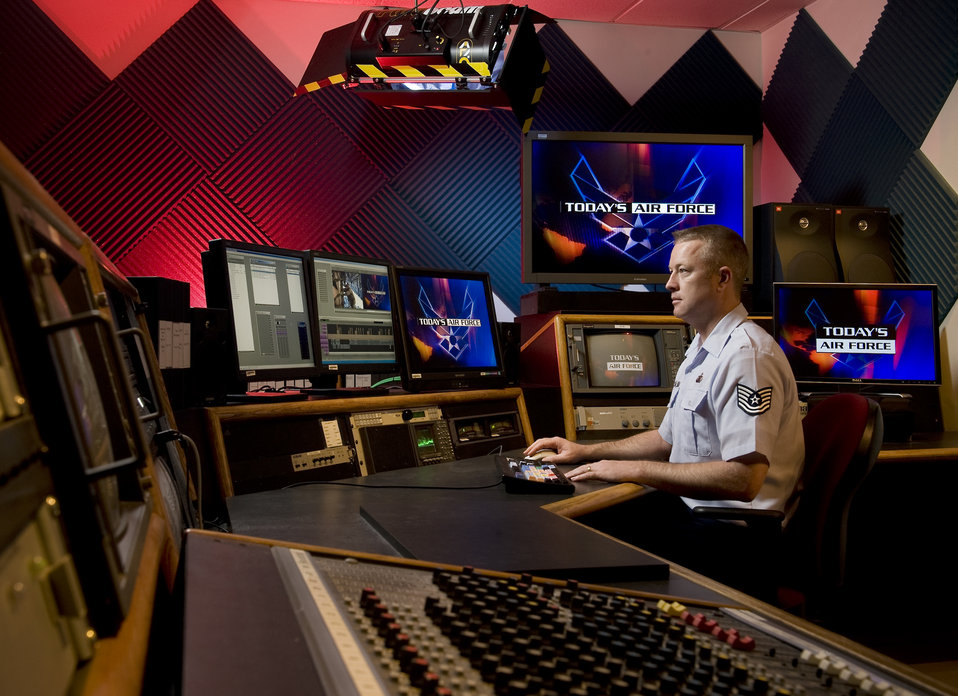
Today's Air Force